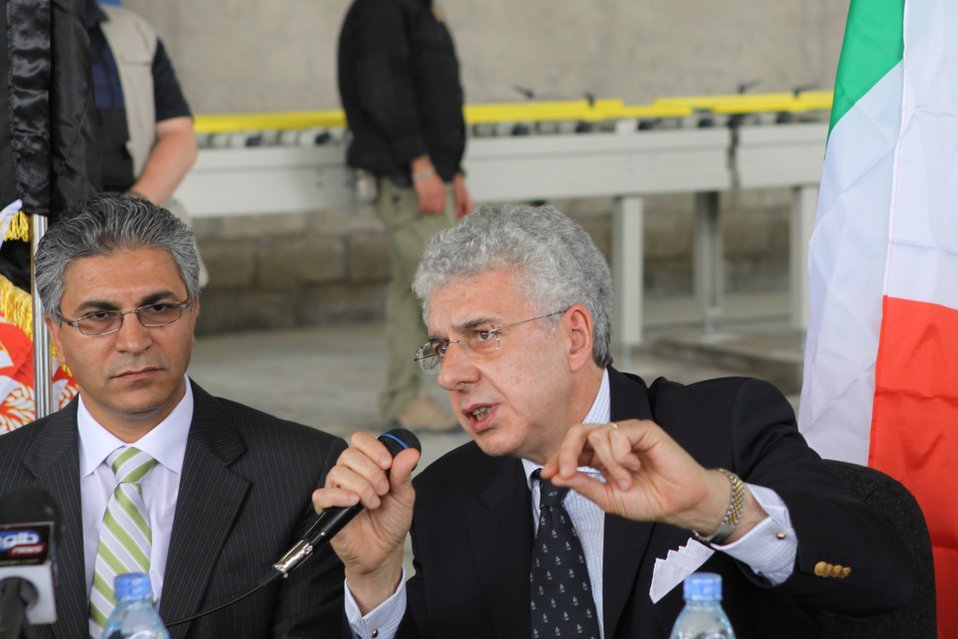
100525 Hirat Marble Conference 348